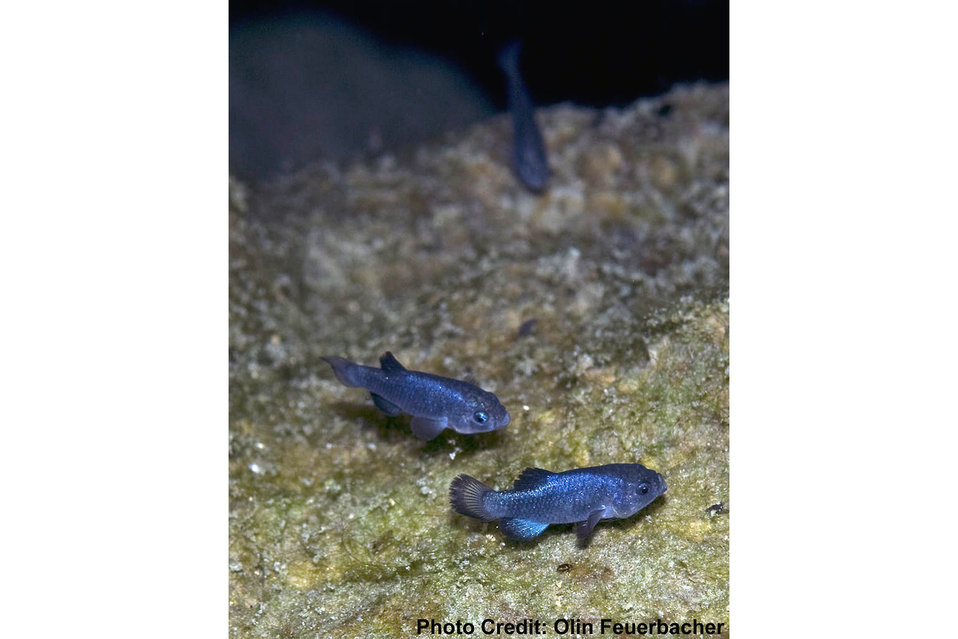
Devil's Hole pupfish (Cyprinodon diabolis)

USFWS Headquarters
Status: Endangered